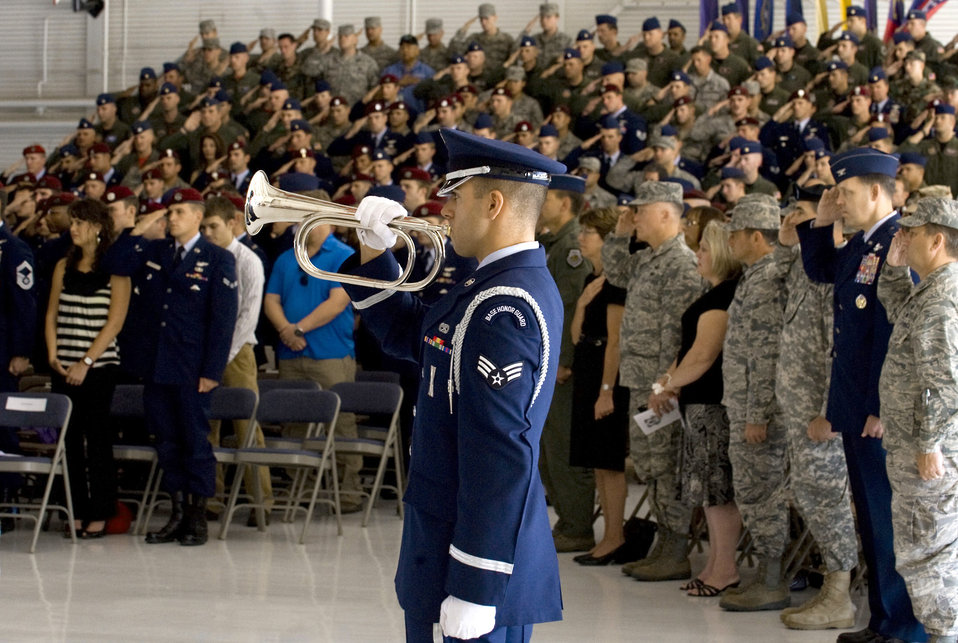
Nellis Airmen honor fallen comrades

Senior Airman Anthony Berardocco plays